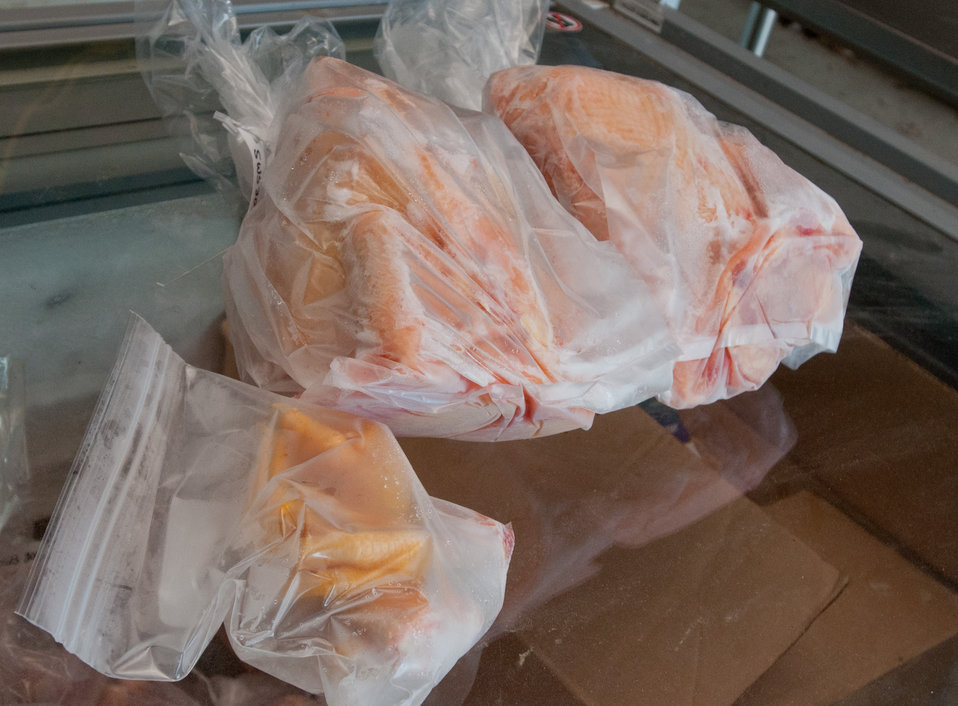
Frozen hens and chicken feet at Nick’s Organic Farm, in Adamstown, MD, on Friday, July 12, 2013. The farm, owned by Nick Maravell, produces Black Angus beef, chicken, turkey, eggs, hay, soybeans, corn, alfalfa, orchard grass, rye; and other crops. The cattle are100% grass-fed receiving certified organic pasture, certified organic hay (in winter), water and mineral salts mixed with sea kelp. The cattle are not fed hormones, antibiotics or animal products. Poultry feed from grain is ground from organic grain. The poultry also graze on organic pastures. The farm has conducted on-farm research with federal, state and non-profit agencies to refine organic practices.